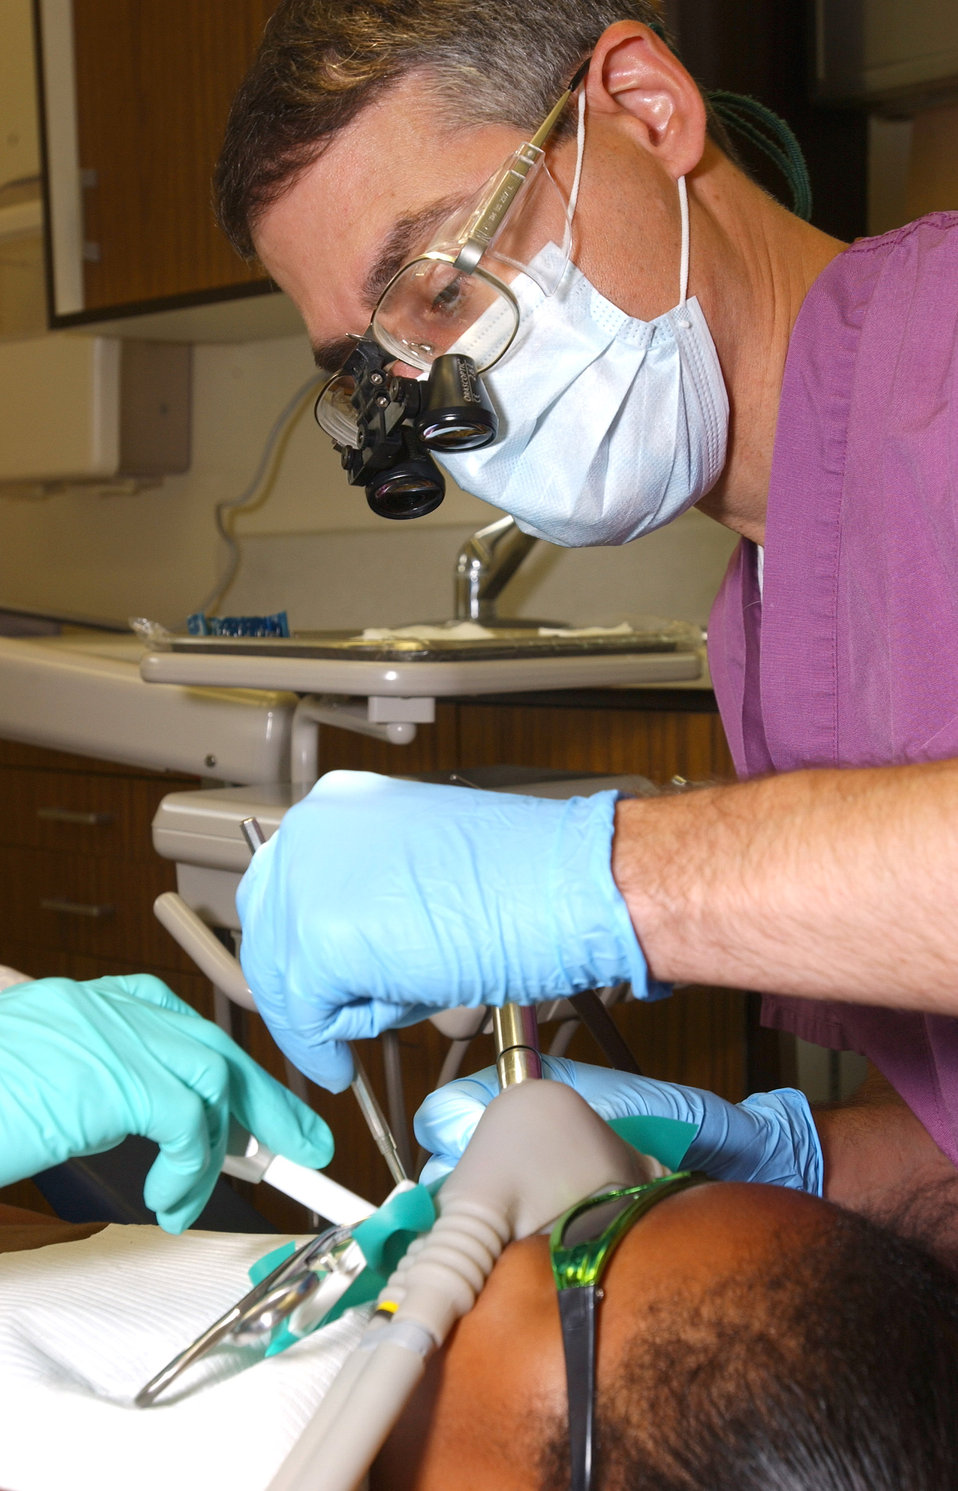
Course prepares dentists to treat children worldwide

Maj. David Kieser replaces a filling in Deaveyon Moore's mouth at the Dunn Dental Clinic Sept. 18 at Lackland Air Force Base, Texas. Major Kieser is a Pediatric Dental Course resident from Scott Air Force Base, Ill. Deaveyon is the daughter of Staff Sgt. T'wanna Moore, a 59th Dental Squadron dental technician at Lackland AFB.